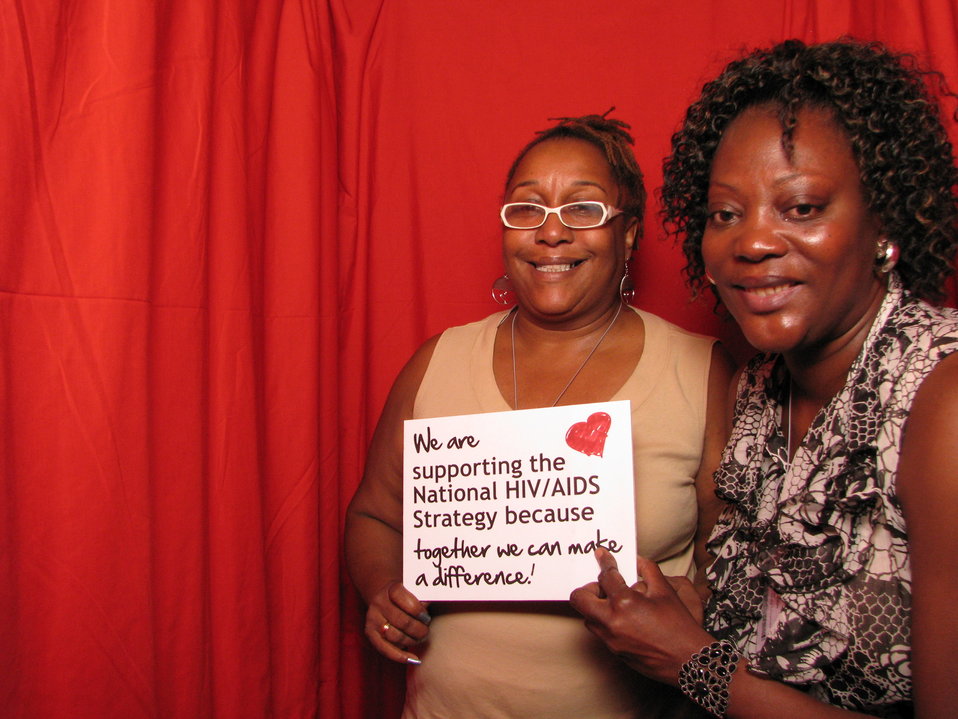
We are supporting the National HIV/AIDS Strategy because together we can make a difference.

From the AIDS.gov photo booth at the U.S. Conference on AIDS, September 2010 (Orlando, FL).